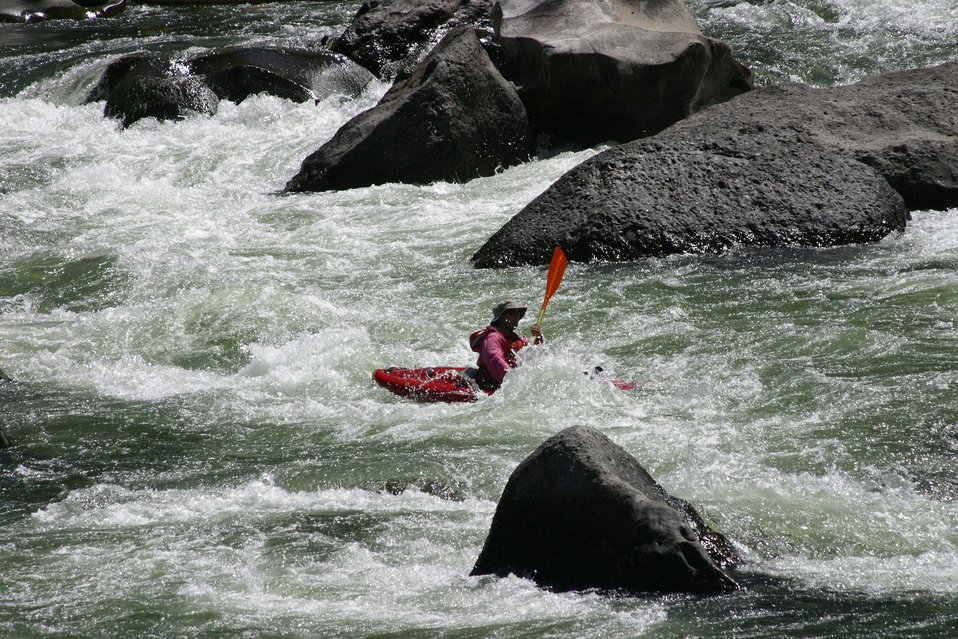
Boaters negotiate Blossom Rapids.